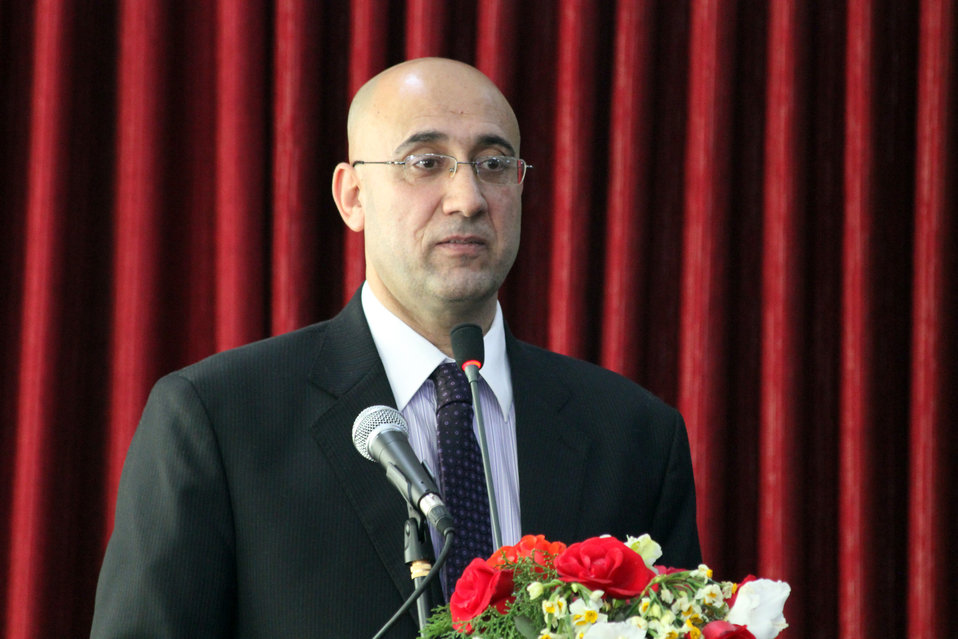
Afghanistan Final National Round of the 2013 Philip C.Jessup International Law Moot Court Competition